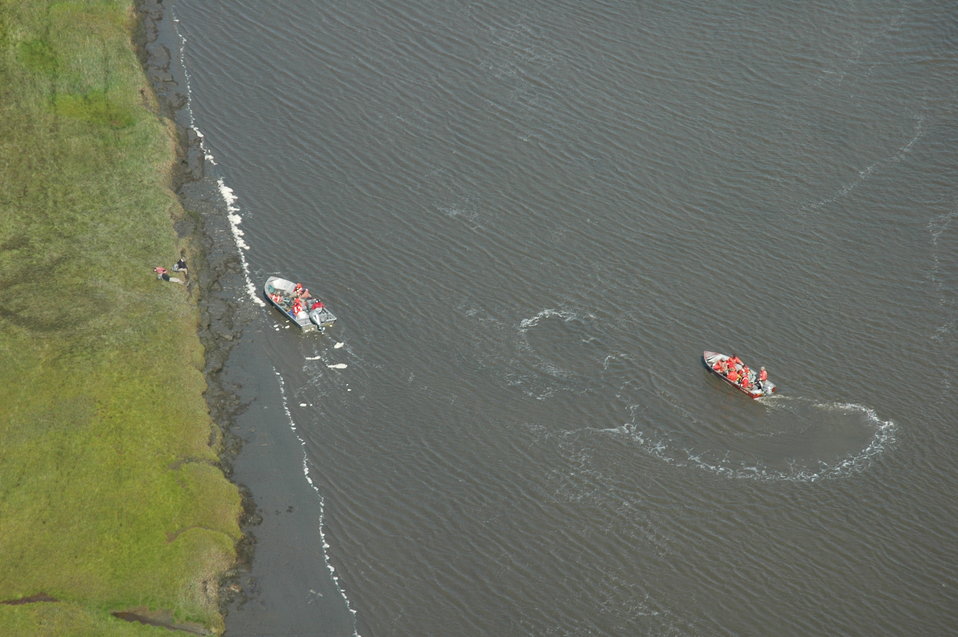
Boats are a major form of transportation for many of the projects on the Y-K Delta.

USFWS Yukon Delta NWR